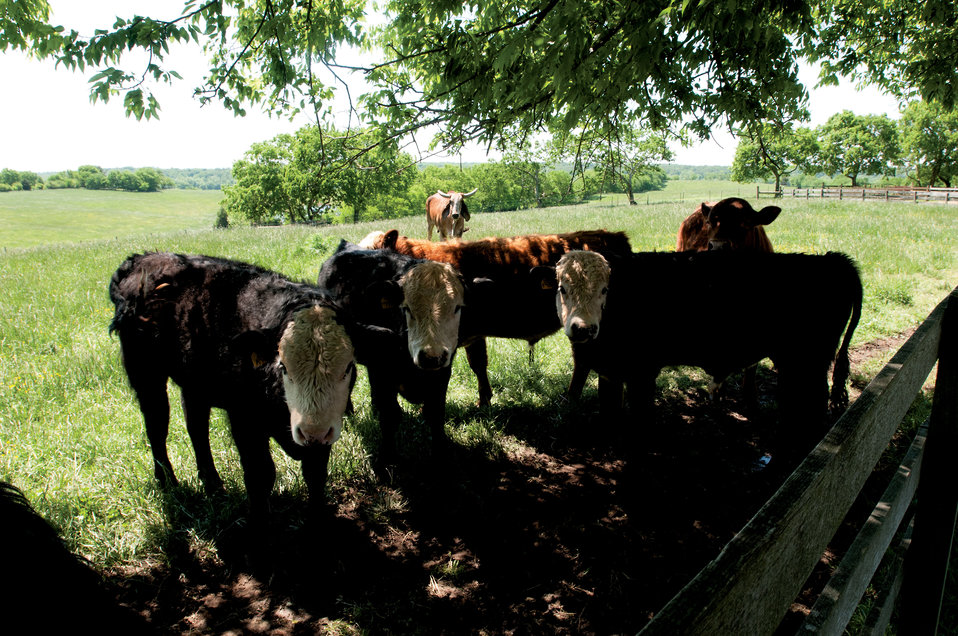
Some of the 65 cattle and 30 calves that are born, raised and roam the pastures of Brookview Farm eating grass or resting under shade trees on, Thursday, May 5, 2011 in Manakin-Sabot, VA, one of many farms participating with Fall Line Farms a local food cooperative in the Richmond, VA area that offers a wide variety of household food staples and specialty items on an ever changing inventory of fruits, vegetables, meats, soaps, eggs, cheeses, flowers, honey, pastas, sauces, syrups, baked goods, mushrooms, flour and grains. Suppliers post what they have on a Lulus Local Food online listing and customers can make their selection. Every Thursday suppliers deliver orders to, one of several pick-up points, designated by the customers in or around the Richmond area.